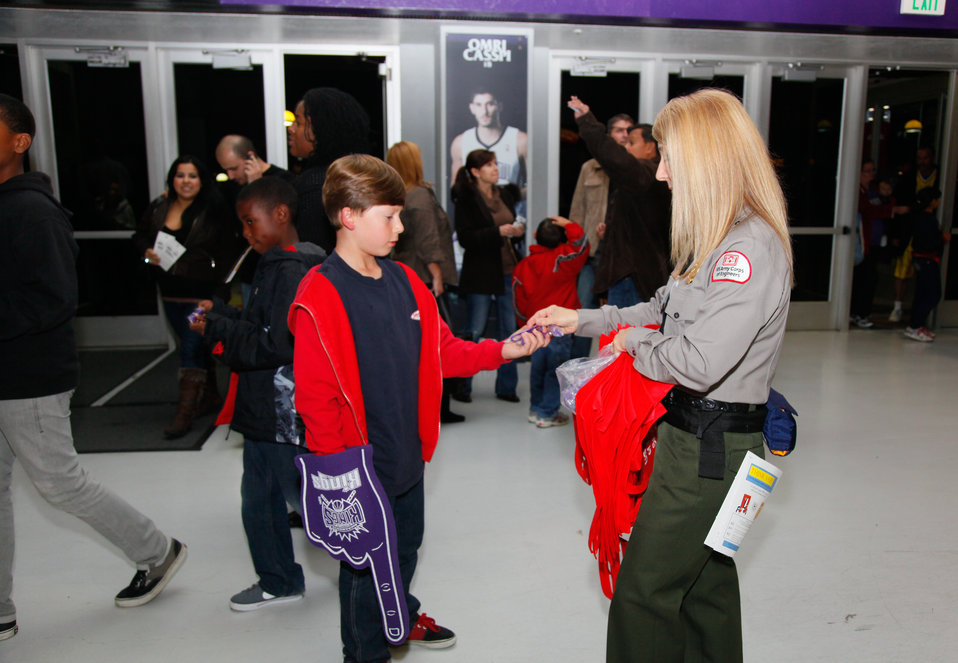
SACRAMENTO, Calif. (Nov. 12, 2010) – U.S. Army Corps of Engineers Sacramento District park ranger Heather Wright talks water safety with a young Sacramento Kings fan before the Kings’ Military Appreciation Night game here Nov. 10. The Sacramento District was recognized along with fellow military servicemembers during opening ceremonies and hosted a welcome booth to explain the Corps’ mission and educate attendees about levee safety, water safety and job opportunities with the Corps.